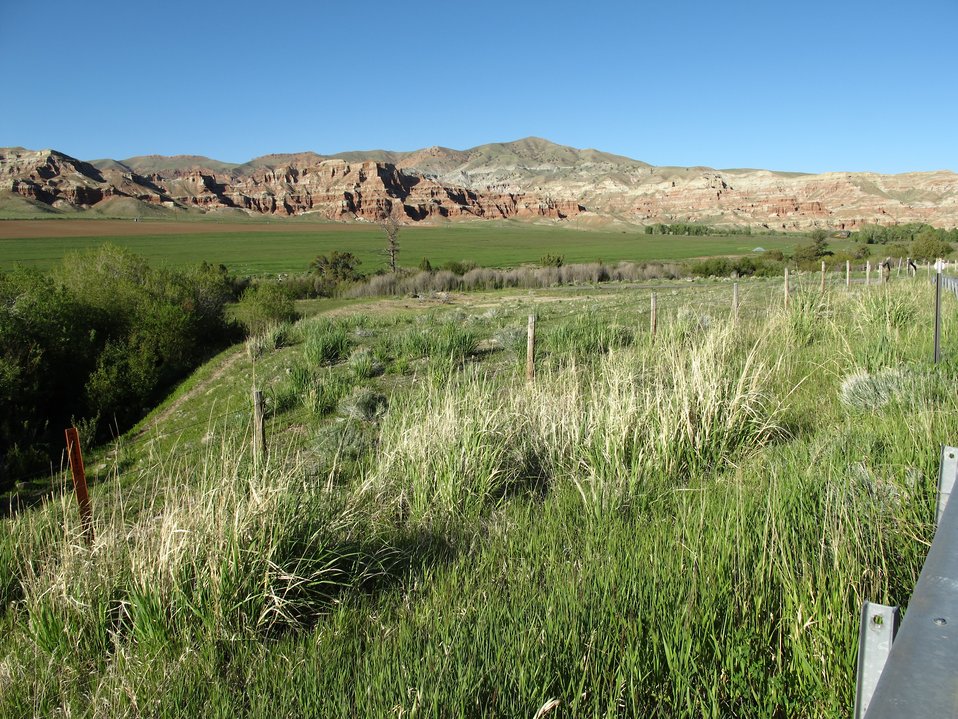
The Wind River Valley, south of Dubois. A contrast in colors between the red and white rock strata and the green irrigated hayfields.